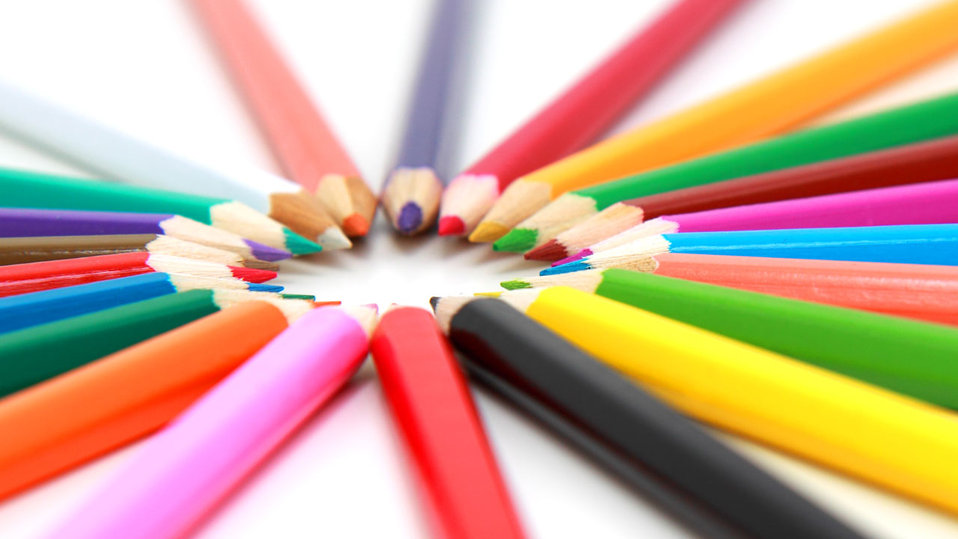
Colored pencils

Circle from colored pencils under angle.